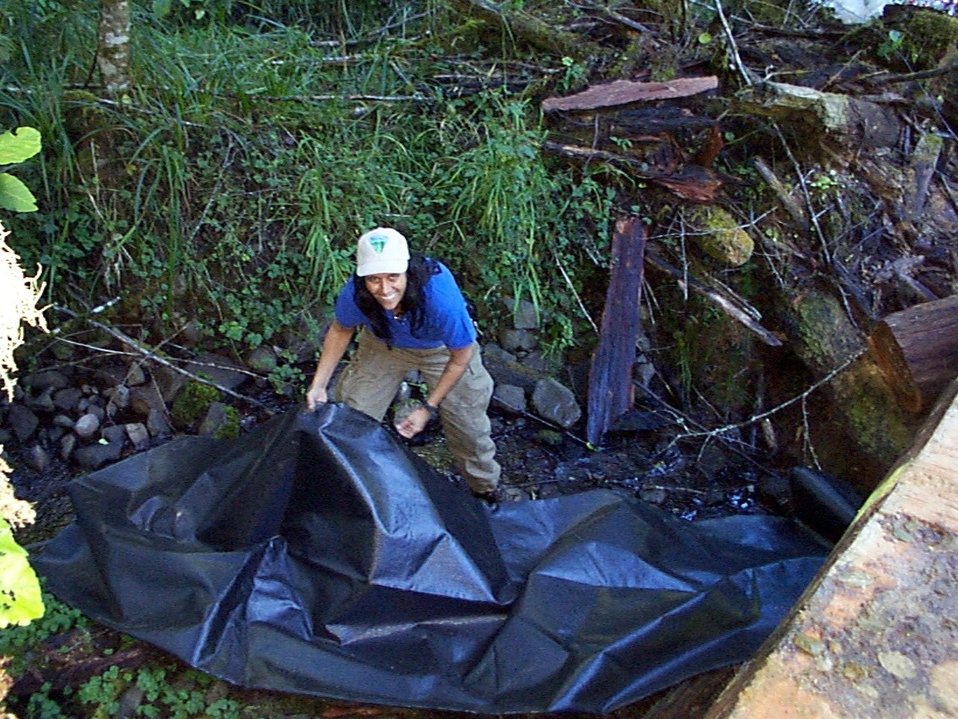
Volunteer works on erosion prevention near the McGowen Creek.